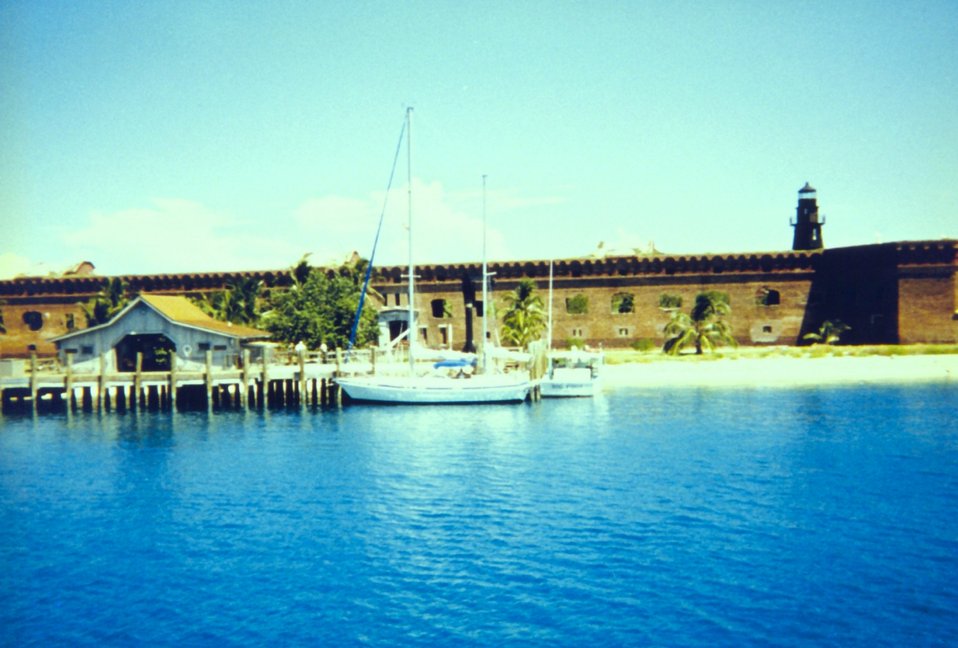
Private boats at the Fort Jefferson dock